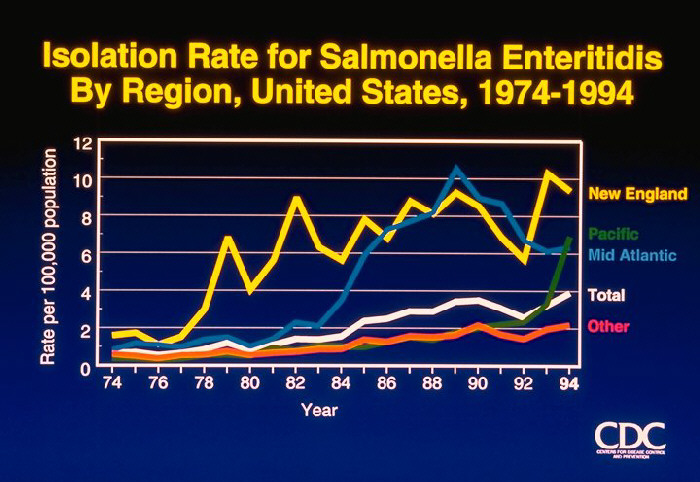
Isolation Rate for Salmonella enteritidis by Region, United States, 1974-1994 (graph).